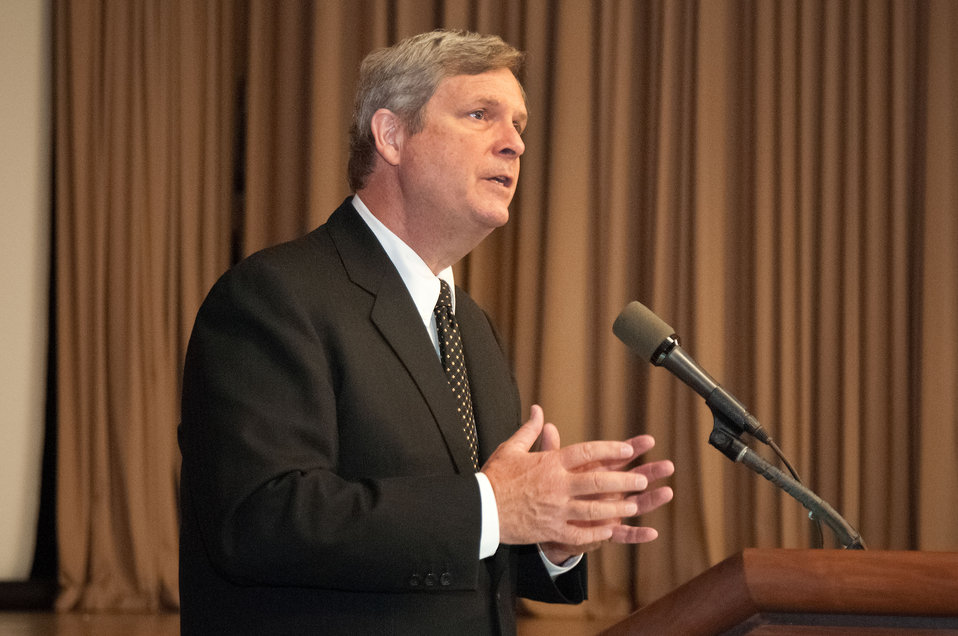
Agriculture Secretary Tom Vilsack addressed the National Farmers Union at the U.S. Department of Agriculture (USDA) in Washington, D.C. on Monday, Sept. 10, 2012. Secretary Vilsack discussed the economics of agriculture, conservation, exports, Rural America and the 2012 Farm Bill.